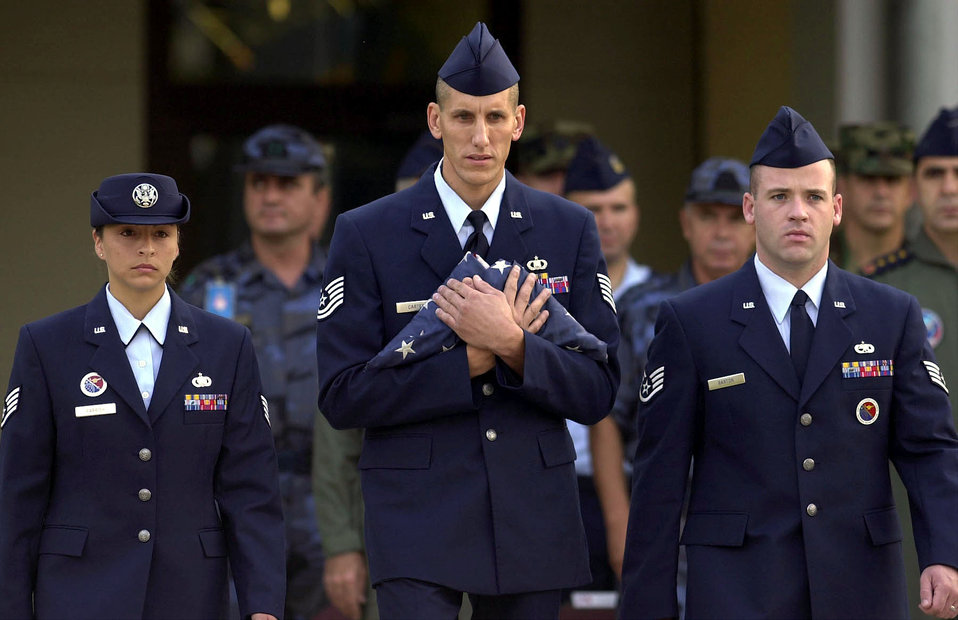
9-11 remembered

INCIRLIK AIR BASE, Turkey -- (From left) Staff Sgt. Melanie Parrish, Tech. Sgt. Kenneth Carter and Staff Sgt. Jason Barton participate in a combined Turkish and American ceremony to mark the events of Sept. 11, 2001. The airmen are on the staff of the airman leadership school here.